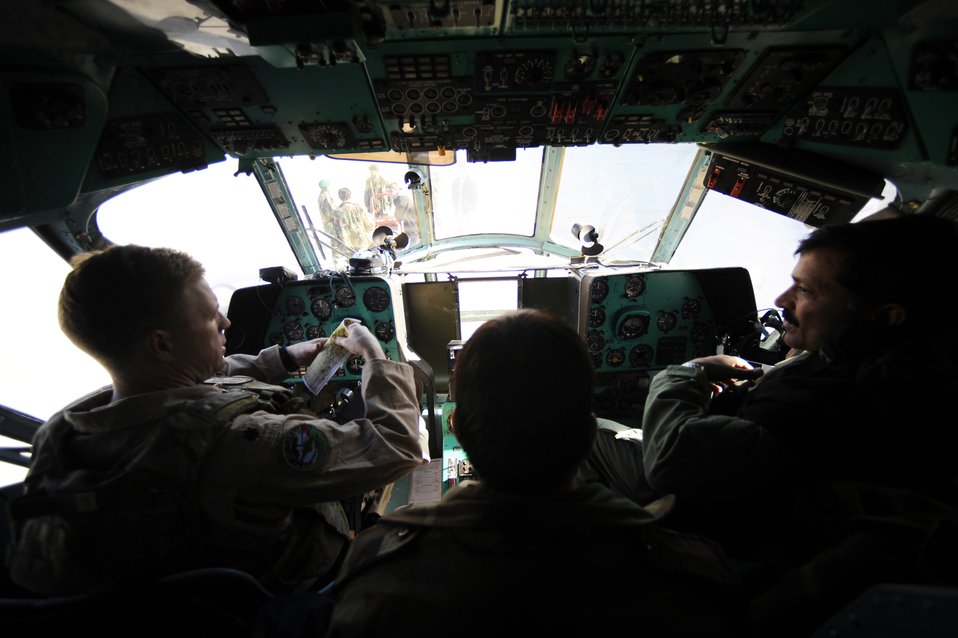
Lt. Col. Todd Prejean, speaks with Afghanistan National Army Air Corp executive officer and pilot

Lt. Col. Todd Prejean (left), speaks with Afghan Col. Sidiqullh Niebi, Afghanistan National Army Air Corp executive officer and pilot, as they prepare to start an Mi-17 helicopter for a mission Jan. 7, 2010, at Kandahar Airfield, Afghanistan. Missions like this are becoming more common as 441st Air Expeditionary Advisory Squadron Airmen continue empowering Afghans provide for their own security by mentoring Mi-17 helicopter pilots. Colonel Prejean is the 441st Air Expeditonary Advisory Squadron commander and helicopter pilot.